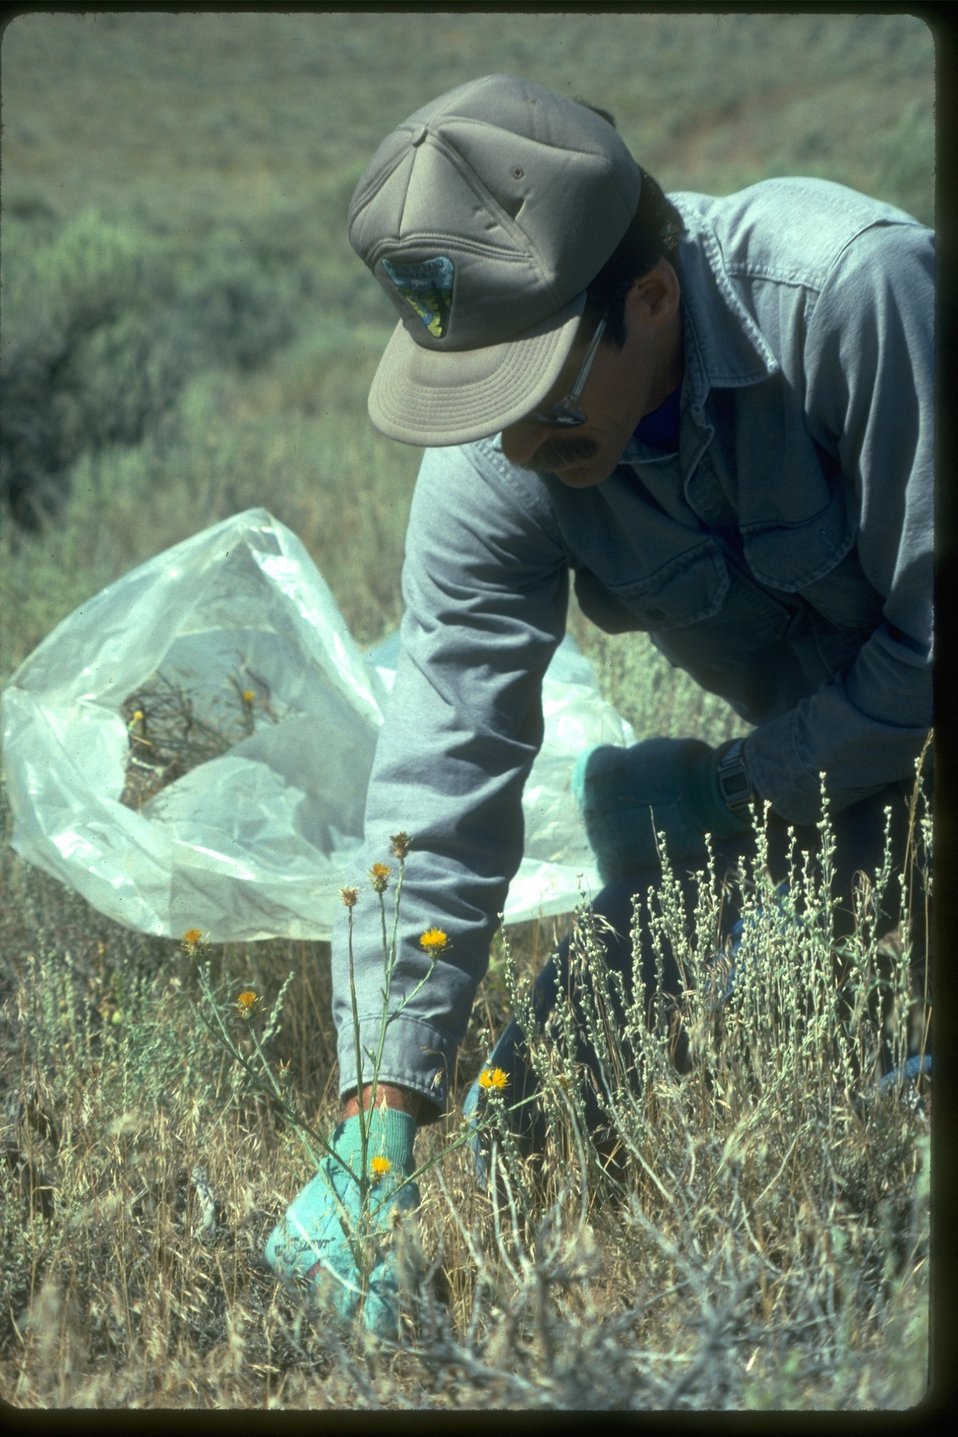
Pulling yellowstar thistle in the Pueblo Wilderness Study Area in the Pueblo Mountains. Rick Hall in the picture.